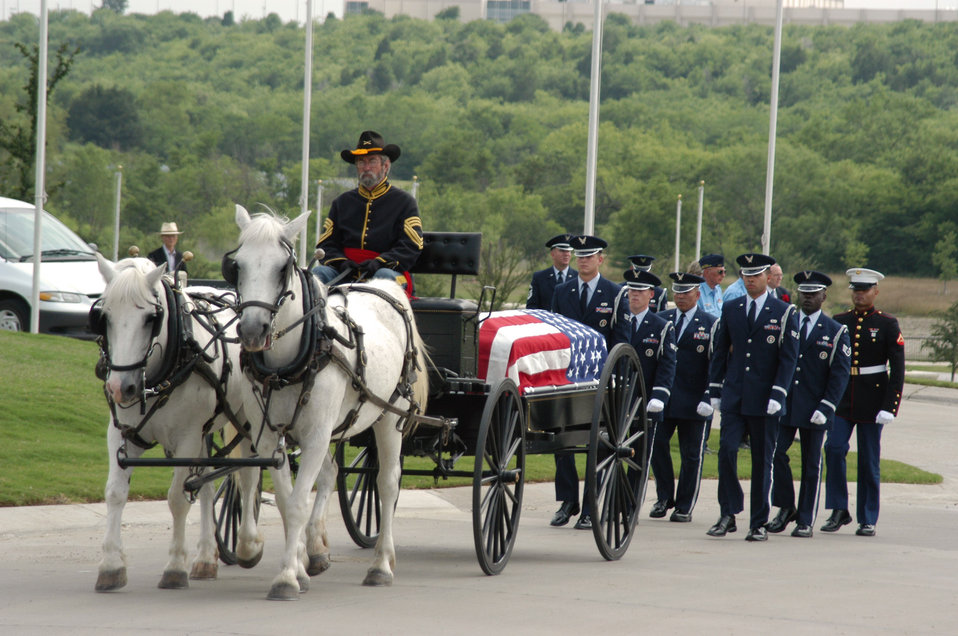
Going home

DALLAS -- A caisson carries the remains of Capt. Troy Cope as an Air Force honor guard follows him to his final resting place during a repatriation ceremony at the Dallas-Fort Worth National Cemetery here May 31. Captain Cope's remains were recovered in China after his F-86 Sabre was shot down in 1952 during the Korean War.